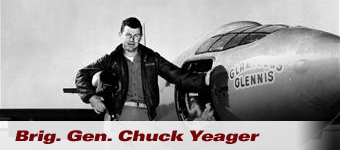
Breaking the sound barrier - Chuck Yeager

Capt. Charles E. Yeager stands next to the Air Force's Bell-built X-1 supersonic research aircraft. He was the first man to fly faster than the speed of sound in level flight on October 14, 1947.